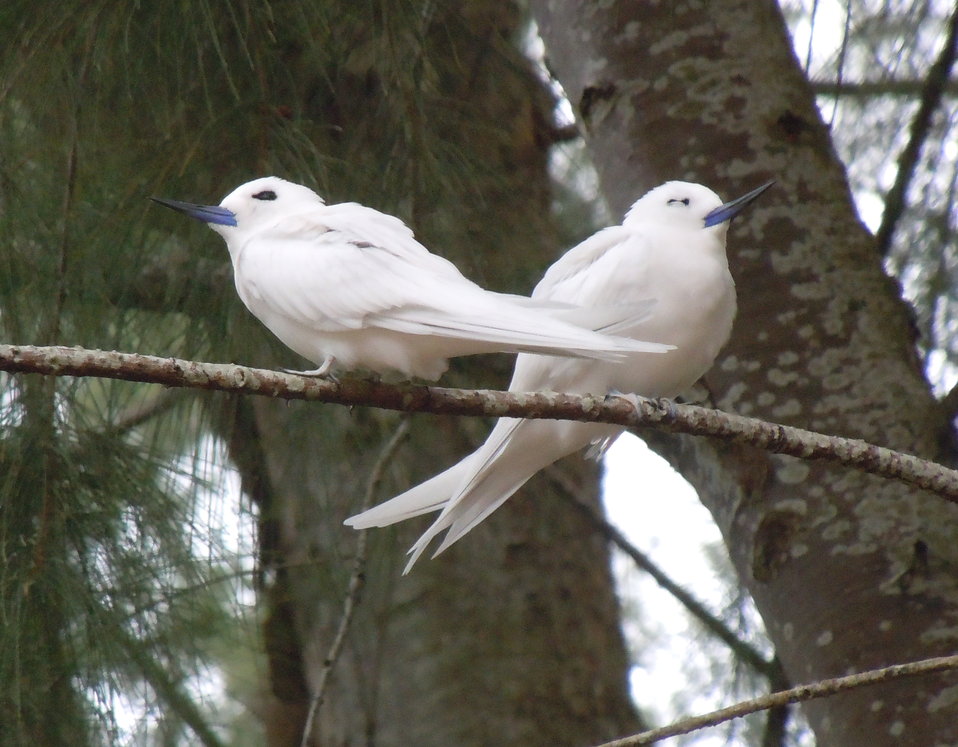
white tern pair in ironwood

Non-native ironwood trees provide nest sites for these rare seabirds. On historically treeless Midway, millions of albatross and other seabirds nest on the ground.
Midway Atoll National Wildlife Refuge
March 2012